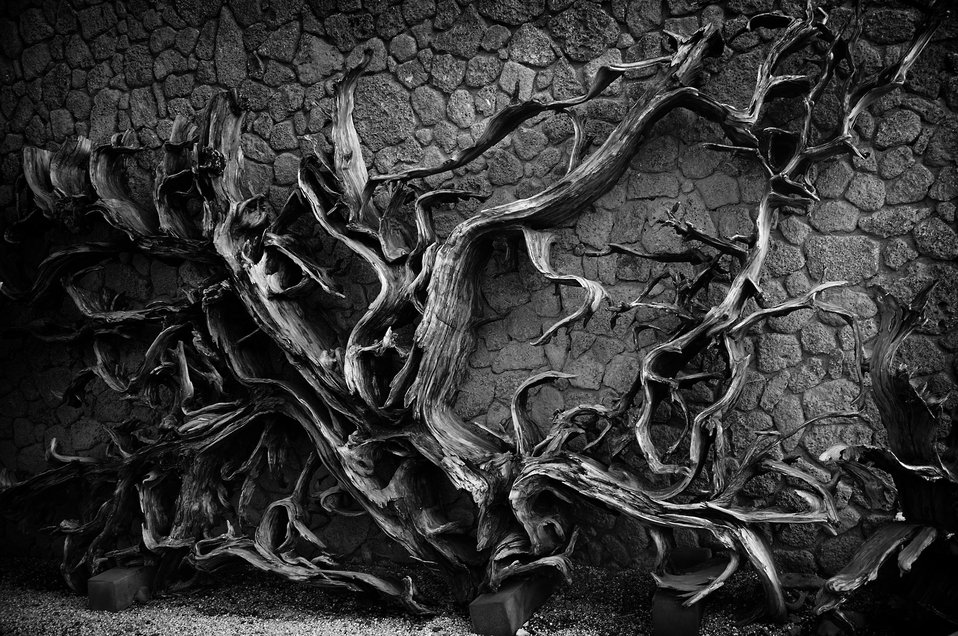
The bark of a tree

South korea, in jeju island.